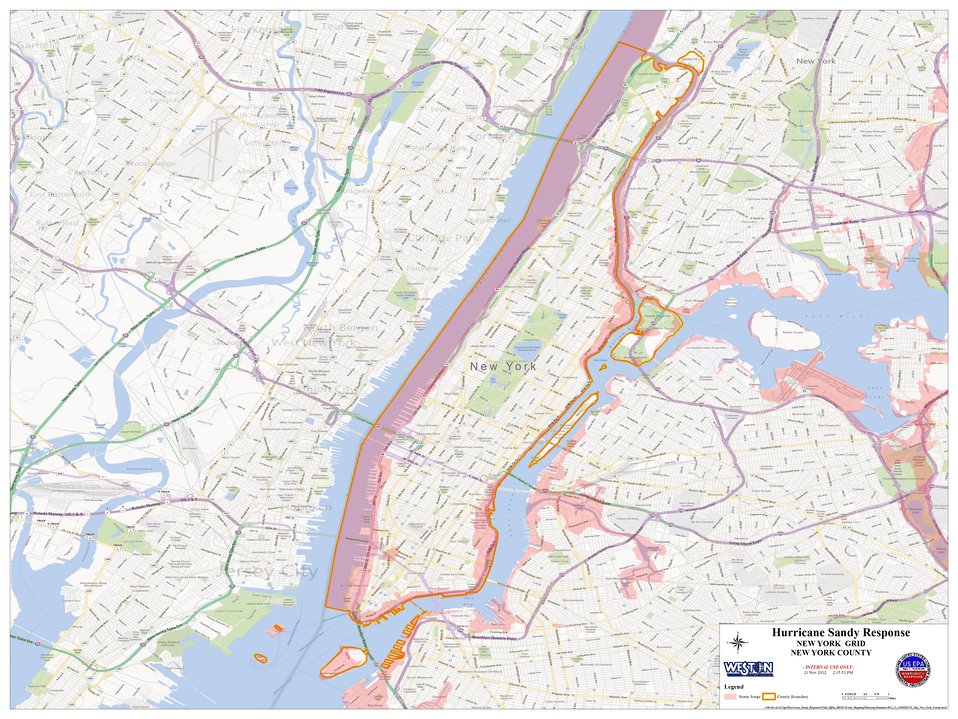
Hurricane Sandy Hazardous Waste Pickup Sites - New York County

We're working with the New York City Department of Sanitation to collect and properly dispose of potentially hazardous common household products from flood-damaged homes and residences in New York City through Dec. 2, 2012. Here's the map for New York County.